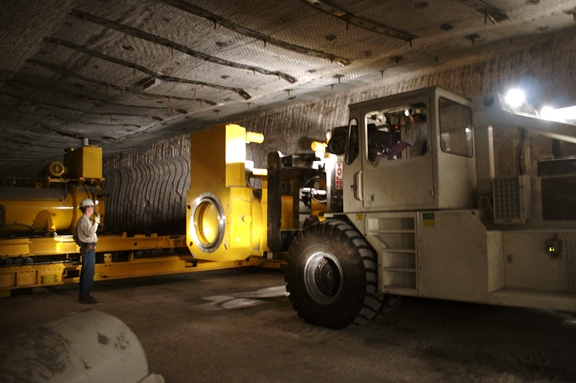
WIPP New Equipment

Using Recovery Act funds, the Waste Isolation Pilot Plant (WIPP) in Carlsbad, N.M., has purchased $5.5 million worth of new equipment to improve efficiency and reduce downtime while repairs are needed.

Designed for use in the disposal of remote-handled transuranic (RH-TRU) waste, the new equipment includes a light-weight facility cask, an alignment fixture assembly shield valve, and a horizontal emplacement machine. RH-TRU waste emits penetrating radiation and must be handled and transported in shielded casks.